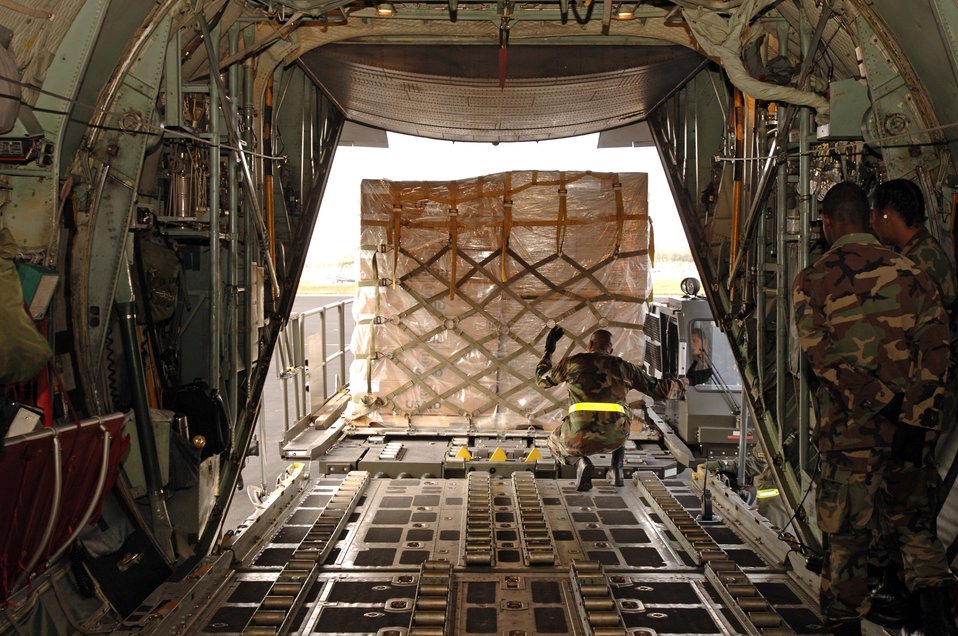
Airmen respond to Bolivian floods

Airmen load a C-130 Hercules with humanitarian supplies March 4 at Homestead Air Reserve Base, Fla. U.S. Southern Command, in cooperation with the U.S. Agency for International Development, is delivering supplies in response to devastating floods in eastern Bolivia.